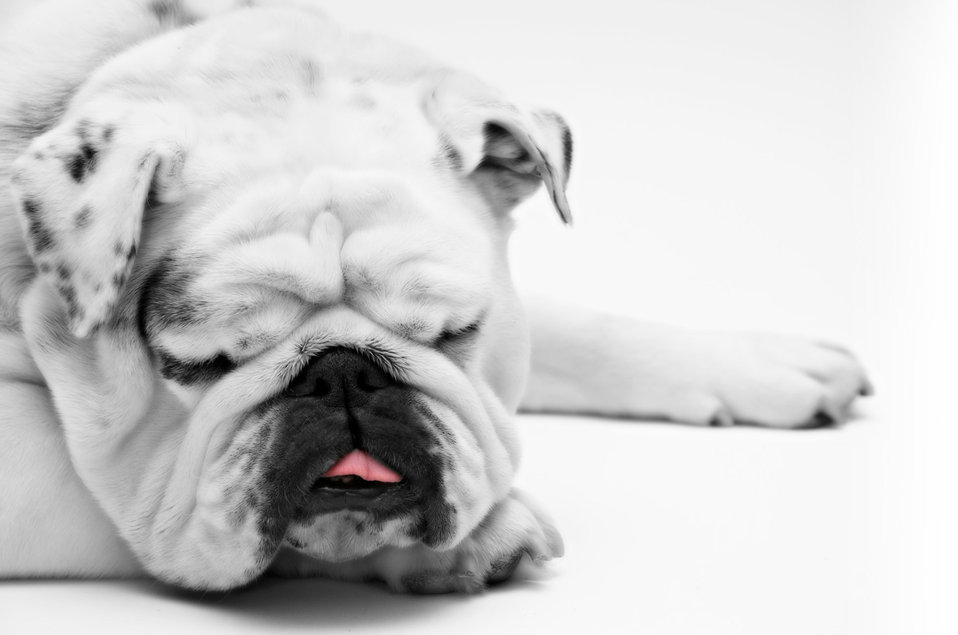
Mia

White bulldog.